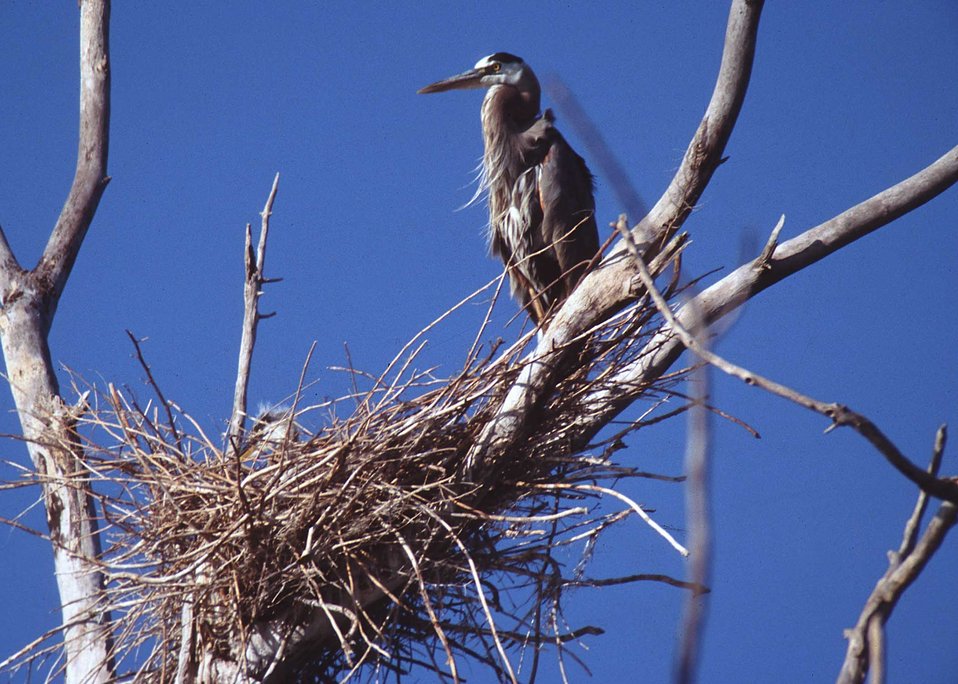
Blue heron with young one in a nest.